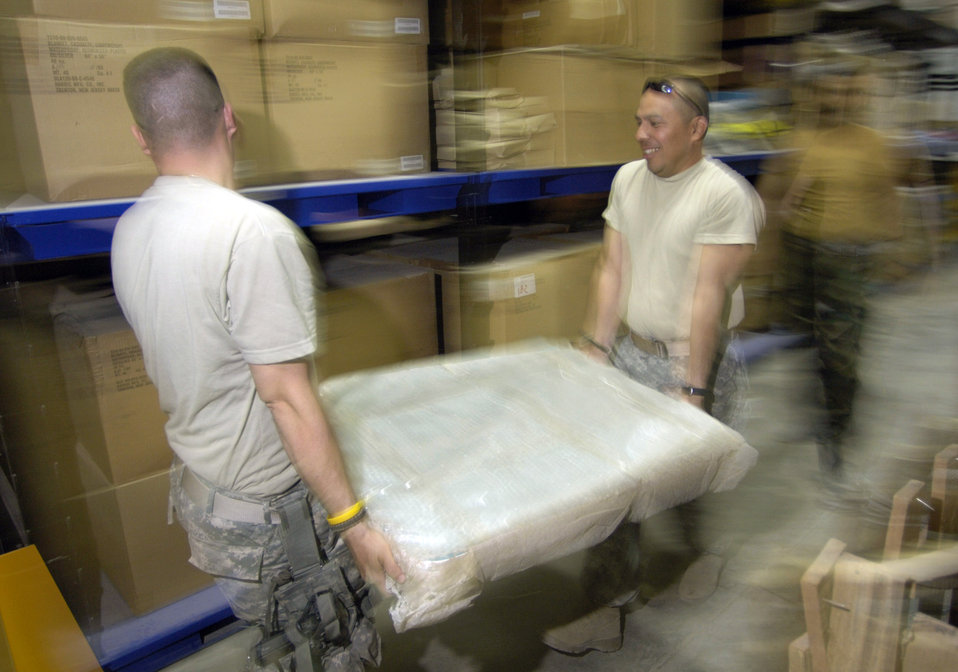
Airmen mentorship helps develop Afghan hospital

Master Sgt. Doug Suddueth (left) and Army Sgt. 1st Class Antonio Rivas carry a load of medical equipment to a truck Aug. 17 in Afghanistan. The medical equipment is being transported to a new $6.5 million, 50-bed hospital on the Afghan national army's Hero Camp near Kandahar Airfield in southern Afghanistan. Sergeant Suddueth is deployed from Maxwell Air Force Base, Ala. Sergeant Rivas is deployed form Fort Sam Houston, Texas. They are medical logistics craftsmen and Afghan national army mentors assigned to the Combined Security Transition Command-Afghanistan on Camp Eggers in Kabul, Afghanistan.